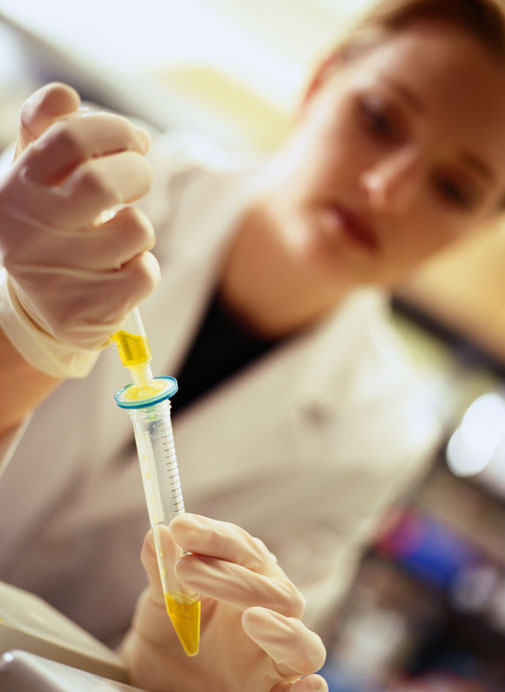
NIDA Researcher

NIDA researchers are working to identify new medications for treating drug addiction.